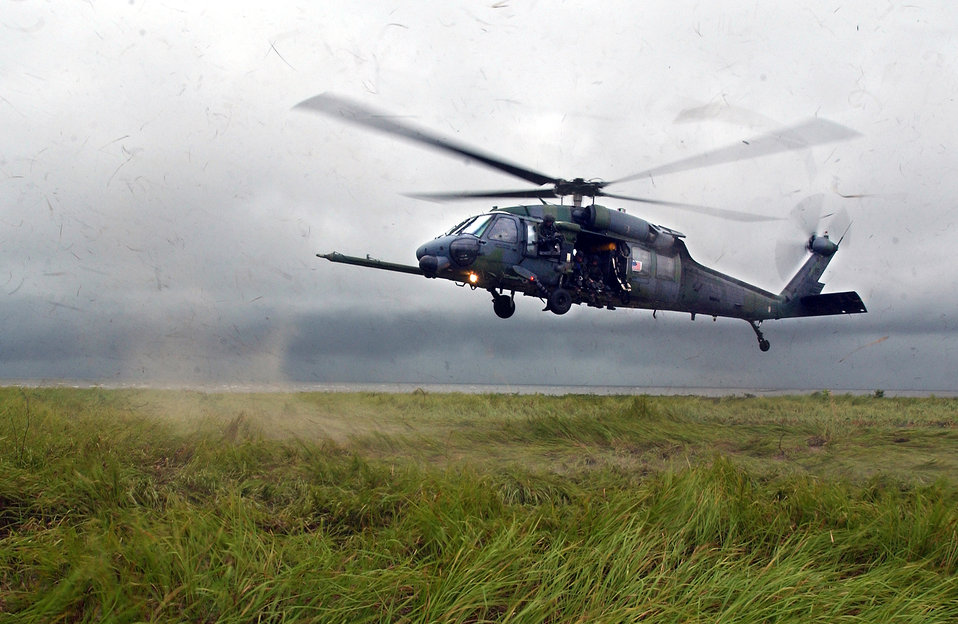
Pave Hawk landing zone

OVER SIERRA LEONE (AFPN) -- An HH-60G Pave Hawk prepares to land during a training mission Aug. 10. The helicopter is assigned to the 56th Rescue Squadron from Naval Air Station Keflavik, Iceland, and is currently serving with the 398th Air Expeditionary Group. The group is providing personnel recovery and emergency evacuation capability for the Humanitarian Assistance Survey Team and the Fleet Antiterrorism Security Team in Liberia.